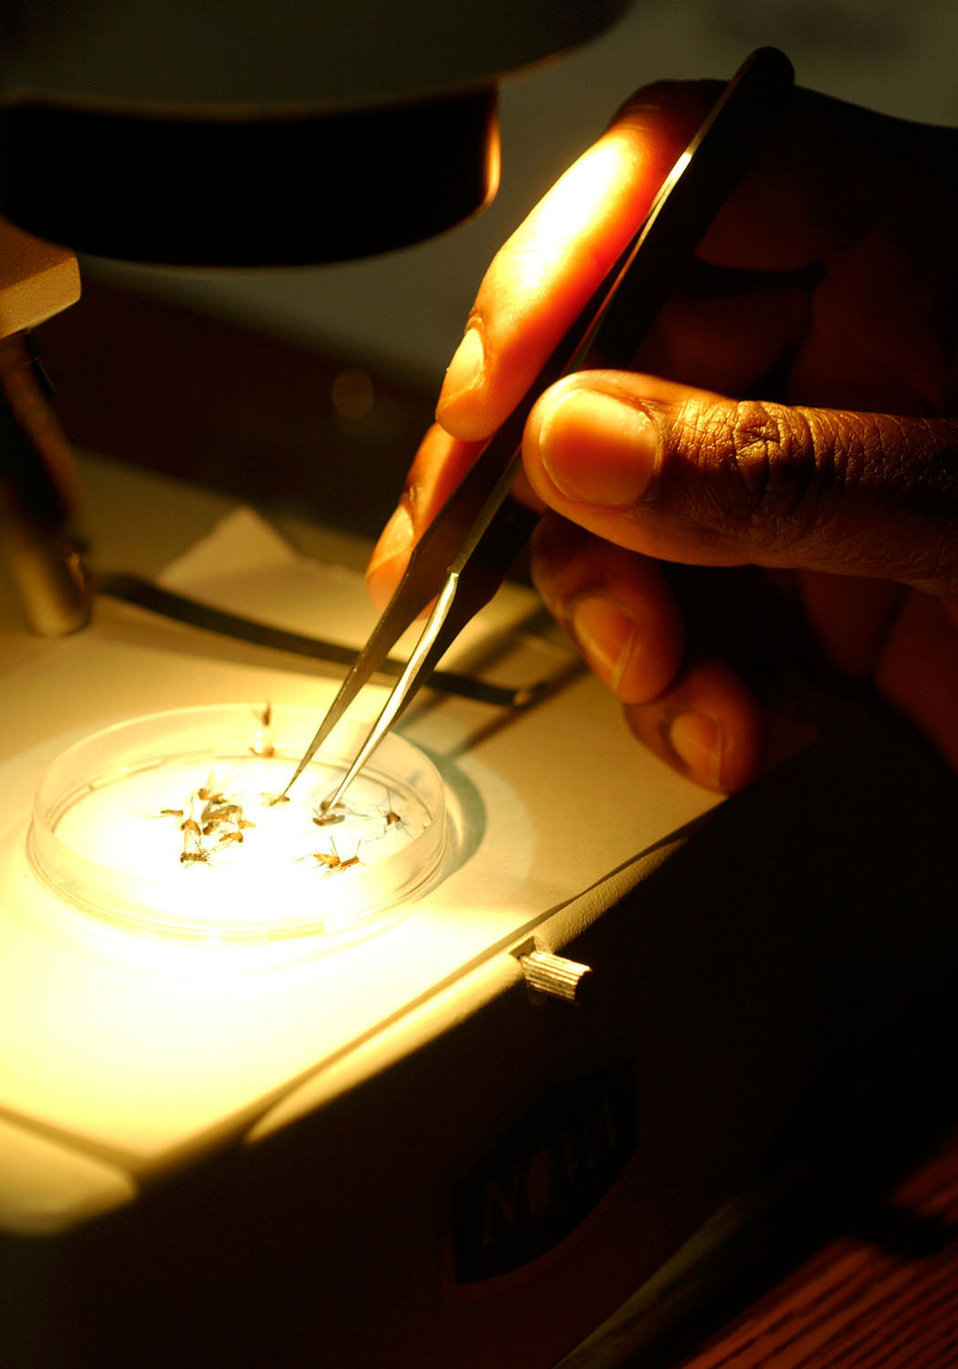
Sorting

FILE PHOTO -- A worker sorts mosquitoes into three different species and by gender. They will be examined for the presence of West Nile Virus.